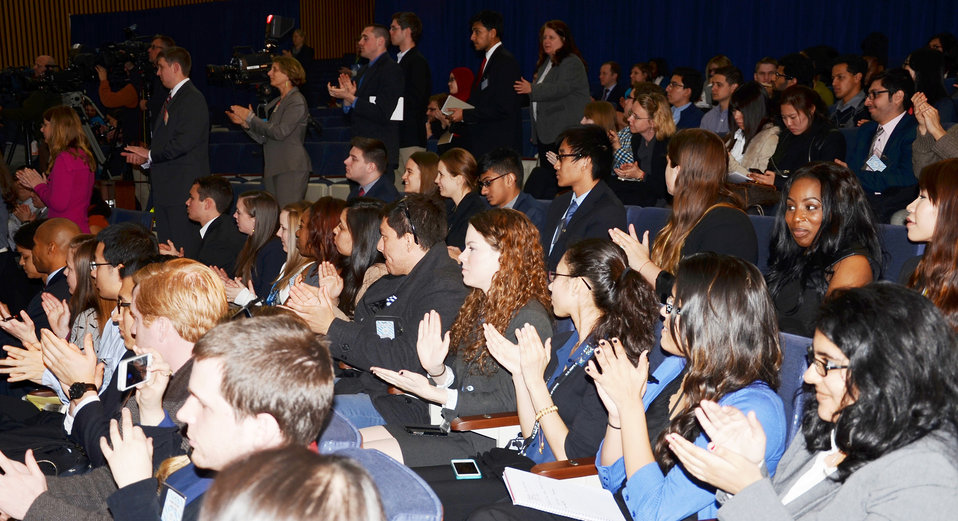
University Students Applaud Secretary Kerry

University students from around the country attending Washington-area programs, Congressional interns, and U.S. Department of State interns applaud U.S. Secretary of State John Kerry after he responded to their questions during a Town Hall at the Department in Washington, D.C., on March 18, 2014.